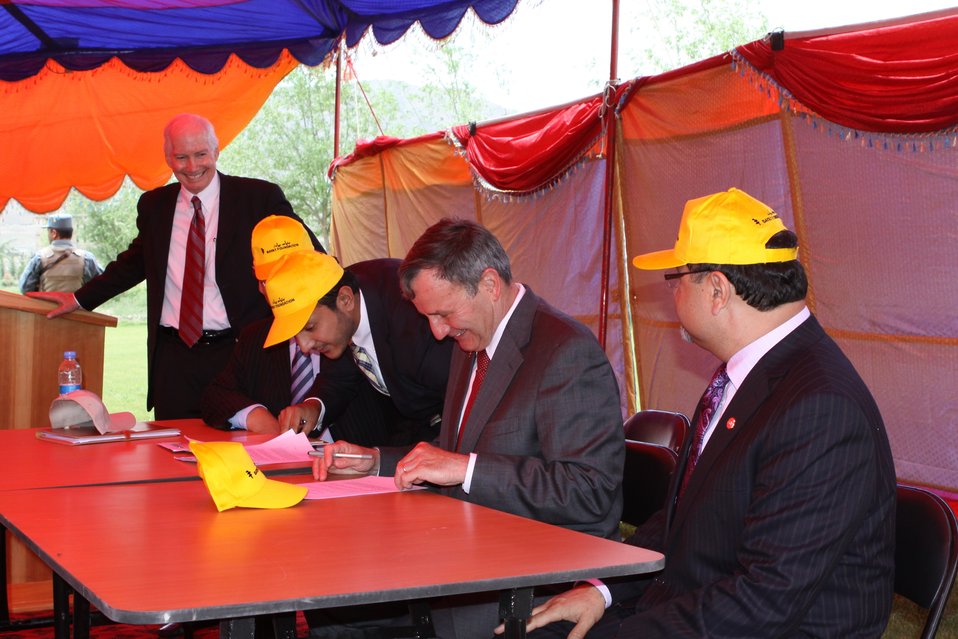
100526 AUAF Graduation 357